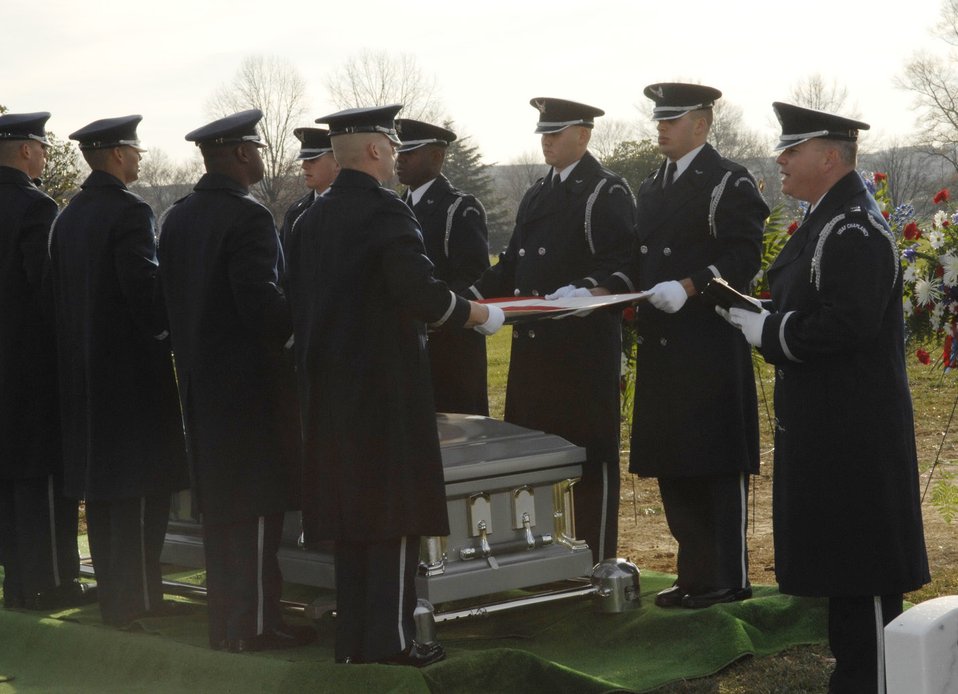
Chaplains provide honored service

Chaplain (Capt.) Kenneth Fisher is one of three Air Force chaplains assigned to Arlington National Cemetery to preside over funerals for Air Force members to be buried there. Each of the services has chaplains assigned and collectively, they conduct an average of 27 funerals a day.